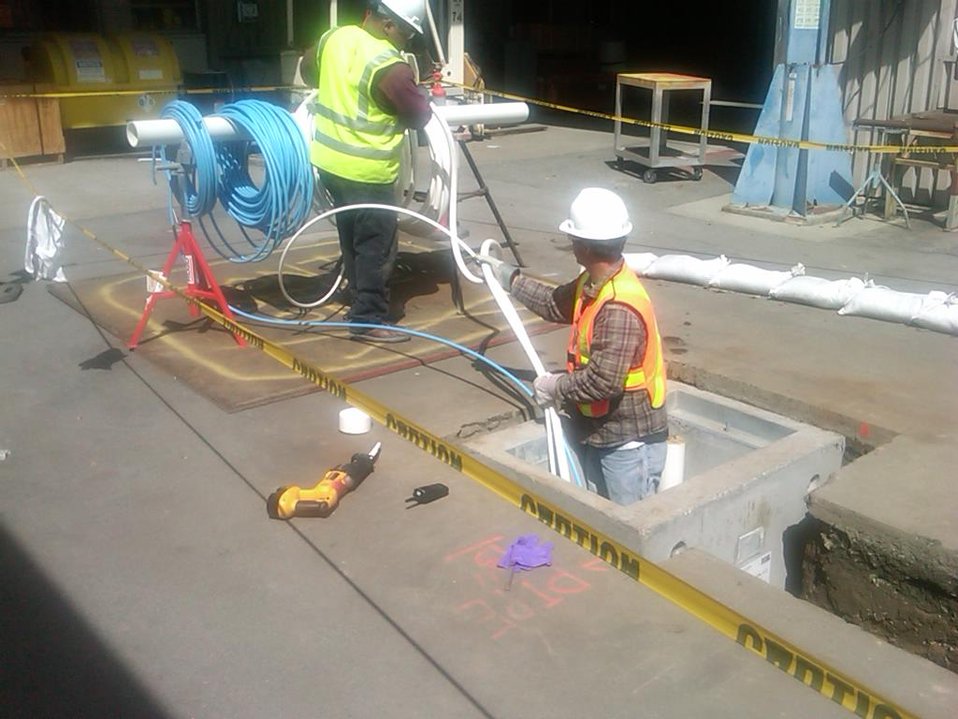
Recovery Act Supports Soil and Debris Cleanup, Groundwater Treatment at SLAC

Recovery Act workers are on track to remove more than 30,000 cubic yards of contaminated soil and debris at the SLAC National Accelerator Laboratory by September 2011.
The Recovery Act invested $14.3 million in legacy cleanup activities at SLAC. In addition to removing contaminated soil and debris that is shipped to local disposal facilities, Recovery Act workers installed three new groundwater treatment systems.